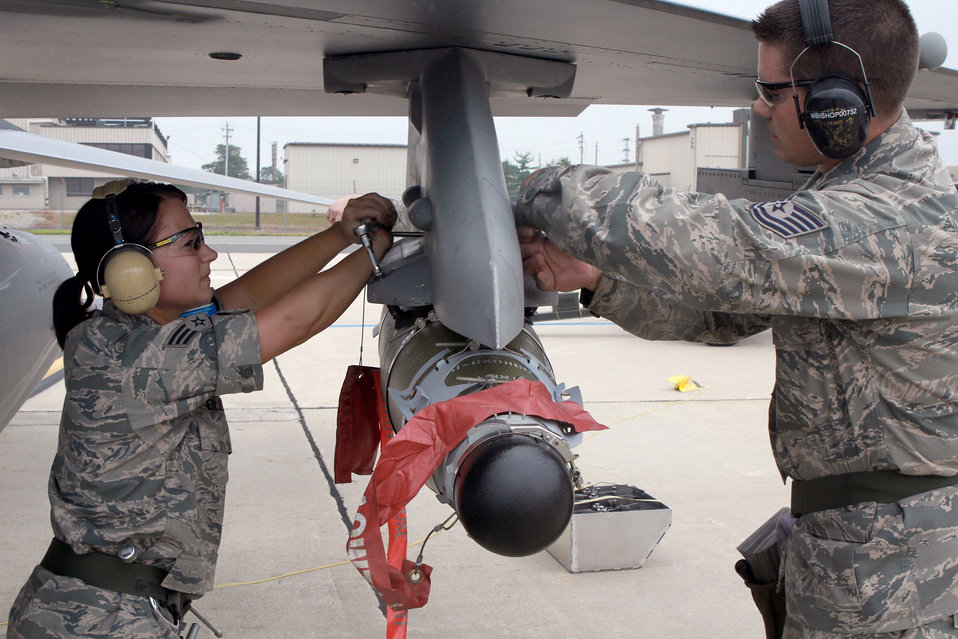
Weapons-loader competition

Senior Airman Kelly Eilenberg (left) and Tech. Sgt. Michael Bishop lock a joint direct-attack munition June 12, 2011, during an annual load-crew competition at Egg Harbor Township, N.J. Sergeant Bishop and Airman Eilenberg are weapons loaders assigned to the New Jersey Air National Guard's 177th Fighter Wing.